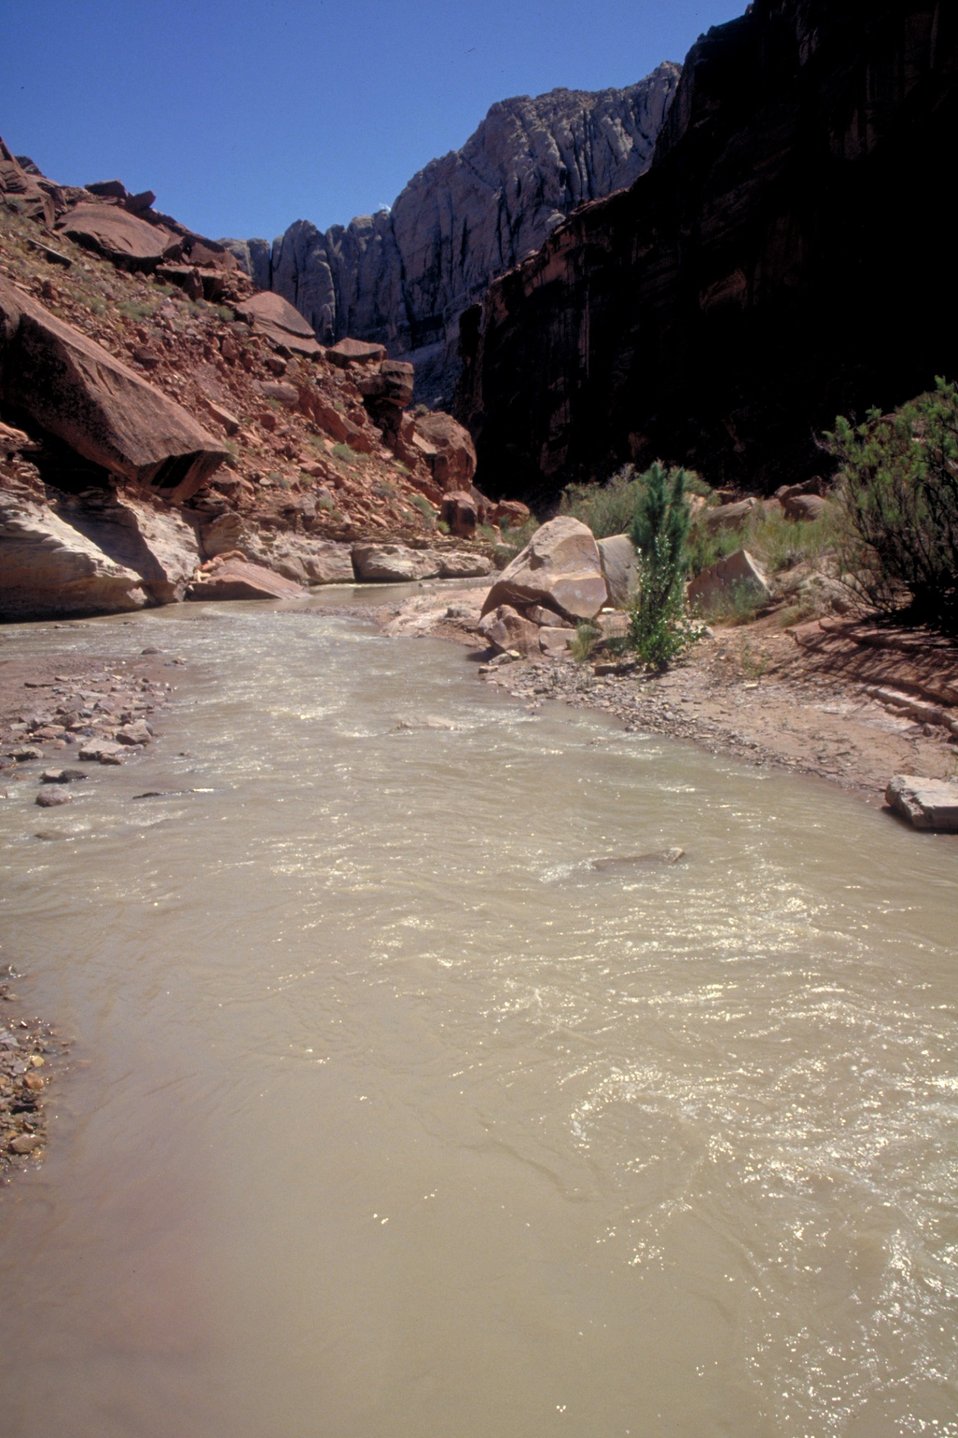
Upper Muddy Creek, San Rafael Swell.l